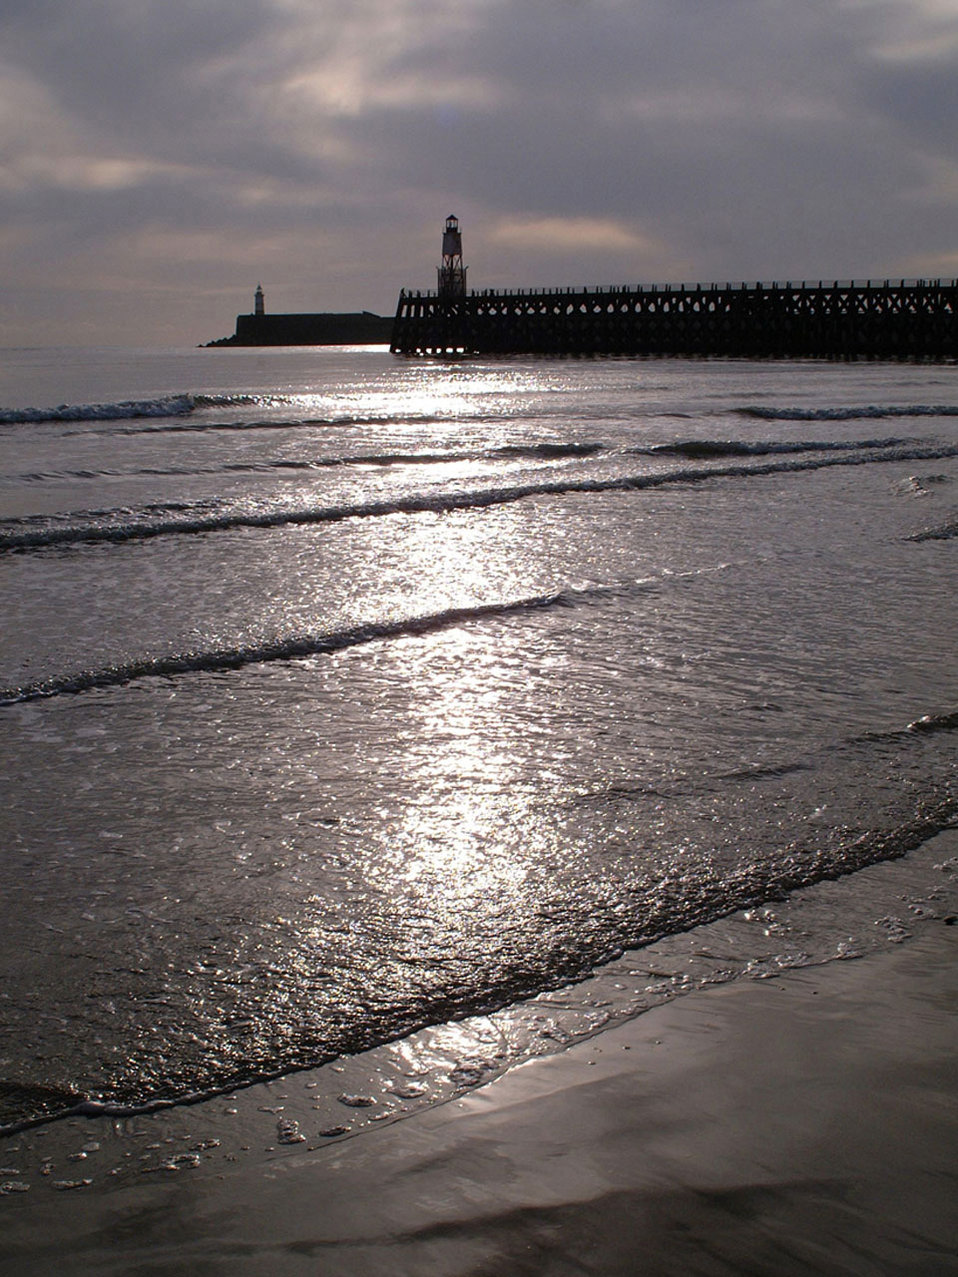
Newhaven harbour back lit vertical landscape with stormy sky..